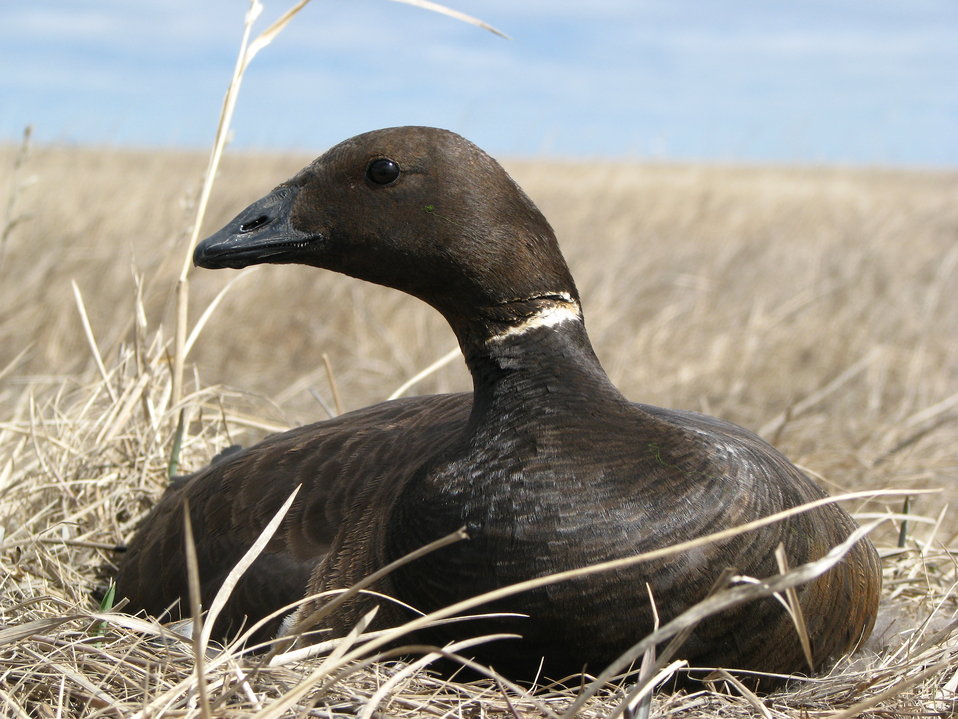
Close up of female Pacific black brant on nest

USFWS Yukon Delta NWR